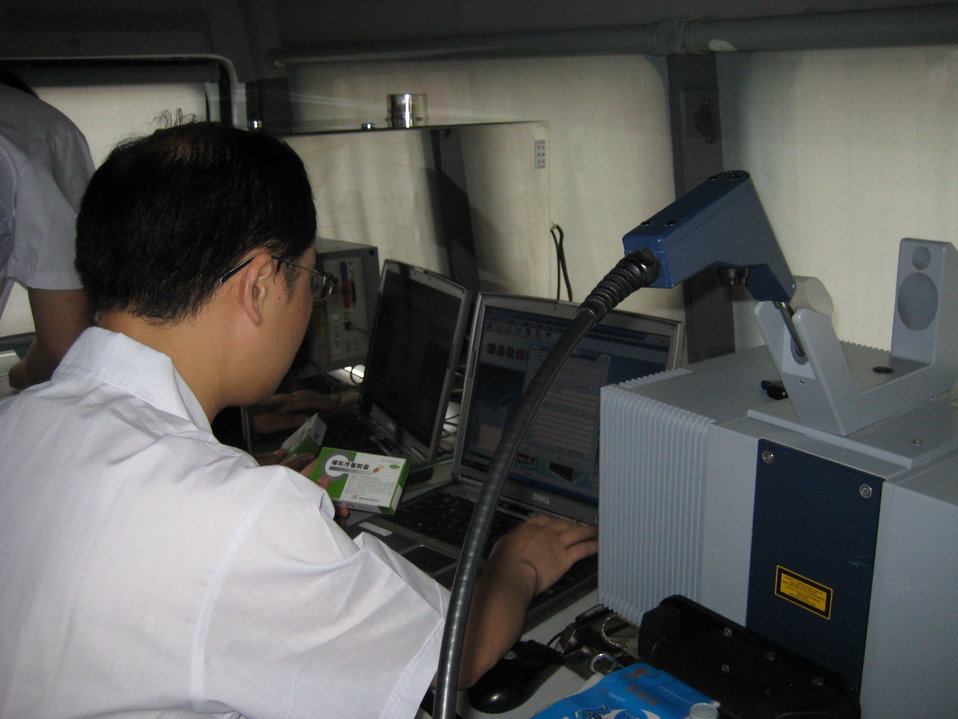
FDA’s China Offices Focus on Product Safety

And the exchange of information works both ways. In Shanghai, Chinese regulators demonstrated the effectiveness of their mobile laboratory program for FDA experts. Here, a Chinese regulator uses near infrared spectroscopy (NIR) to test medicine in a mobile lab in a pharmacy parking lot. Read this FDA Consumer Update: www.fda.gov/ForConsumers/ConsumerUpdates/ucm284461.htm

Consumer Updates are a quick and easy way to pick up important health information for you and your family. For a complete list of Consumer Updates see the Consumer Updates photo set: www.flickr.com/photos/fdaphotos/sets/72157624900896241/.

For the latest Consumer Updates go to: www.fda.gov/forconsumers/consumerupdates